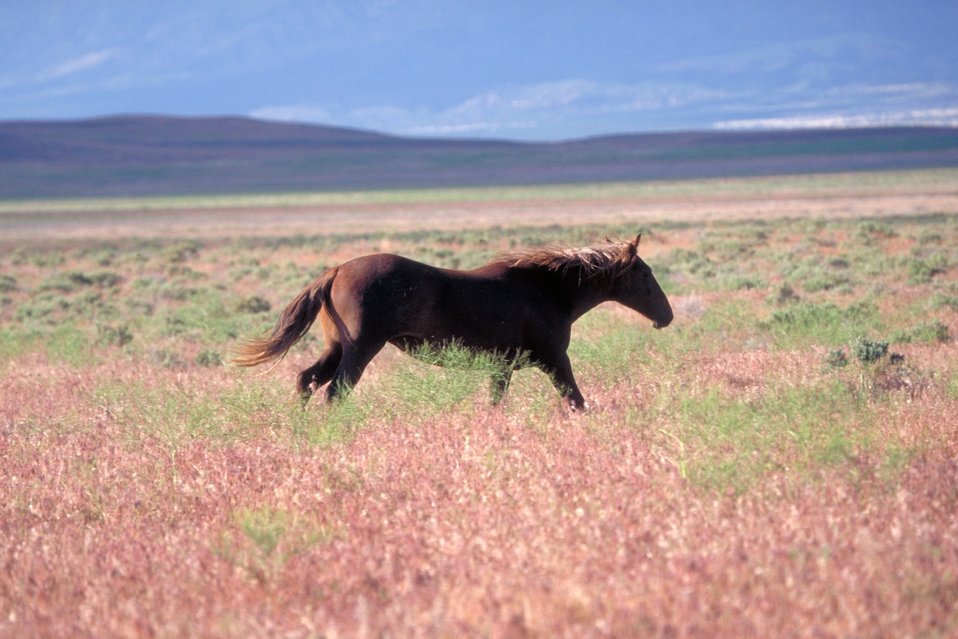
Onaqui Herd near Dugway, Utah.